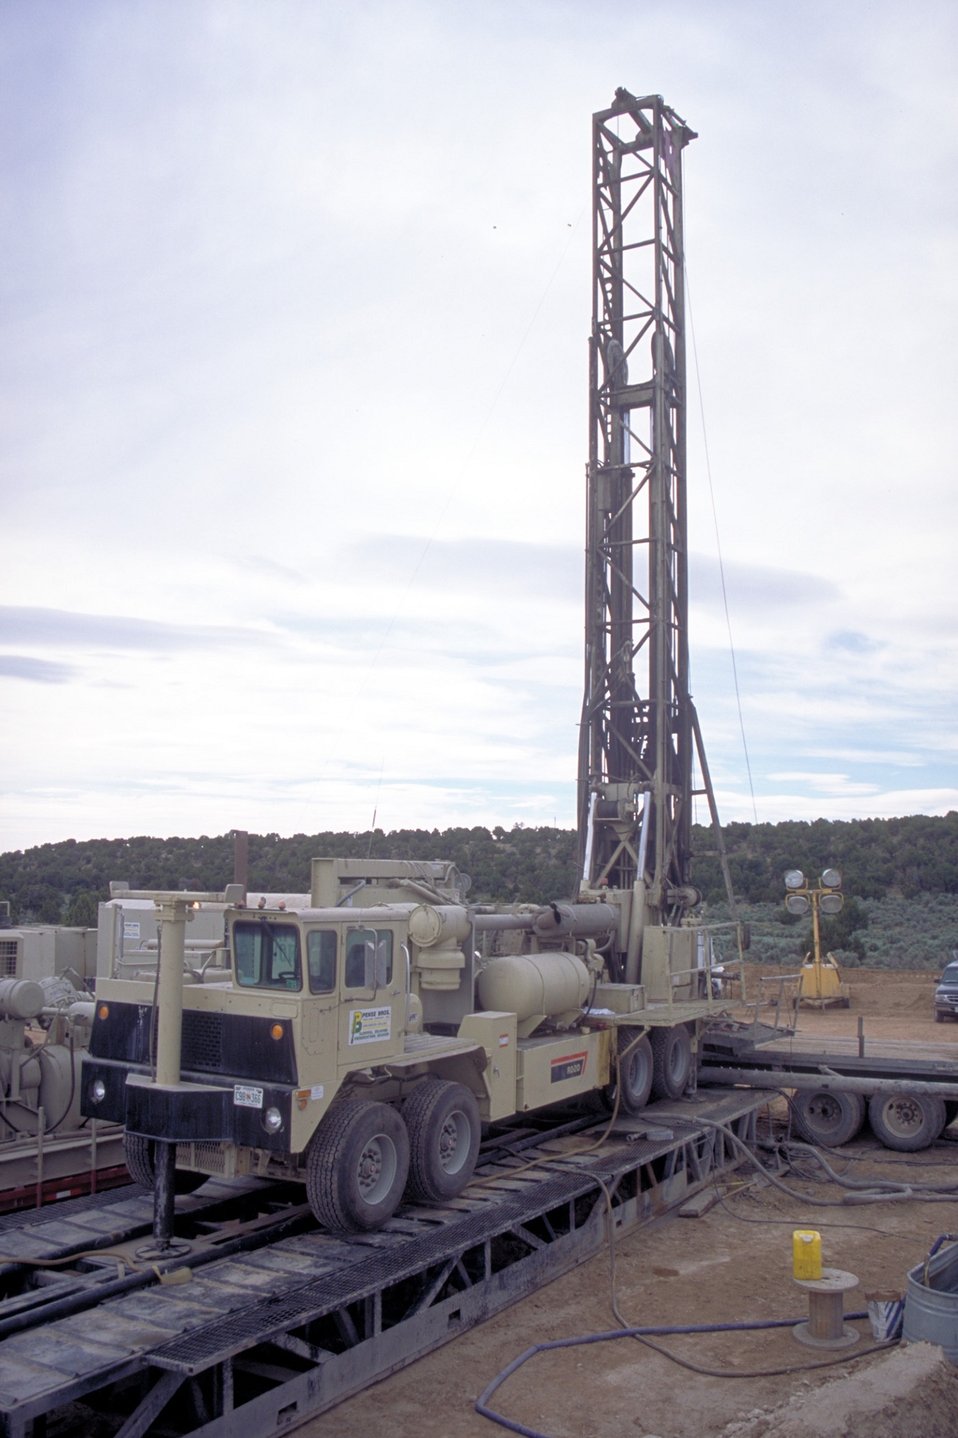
Drilling for coal bed methane near Price, Utah.